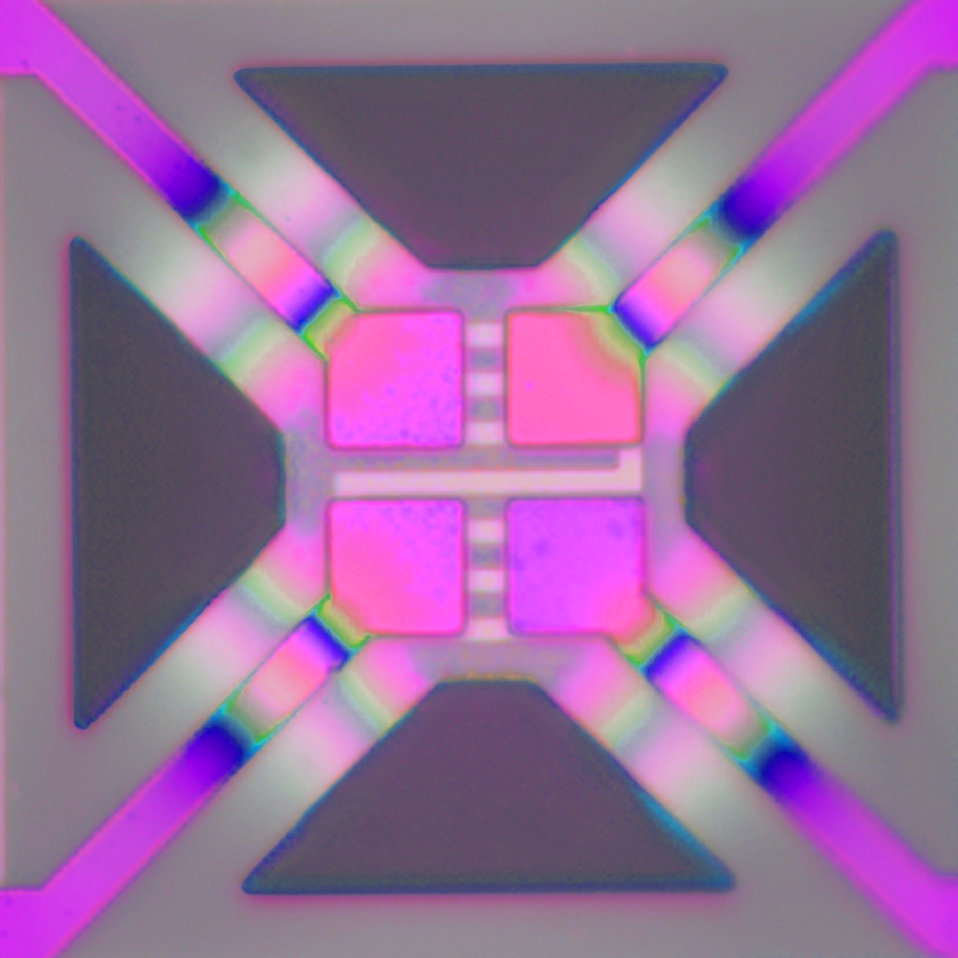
Magenta Microheater

A NIST-developed microheater device can be used to quickly detect toxic gases such as sarin or mustard gas. Slight variations in the thickness of the sensing film covering the microheater cause changes in color that have been enhanced in this micrograph. NIST researchers will use the AML's Nanofabrication Facility to make arrays of such microsensors tailored to sense specific chemicals at part per billion concentration levels.